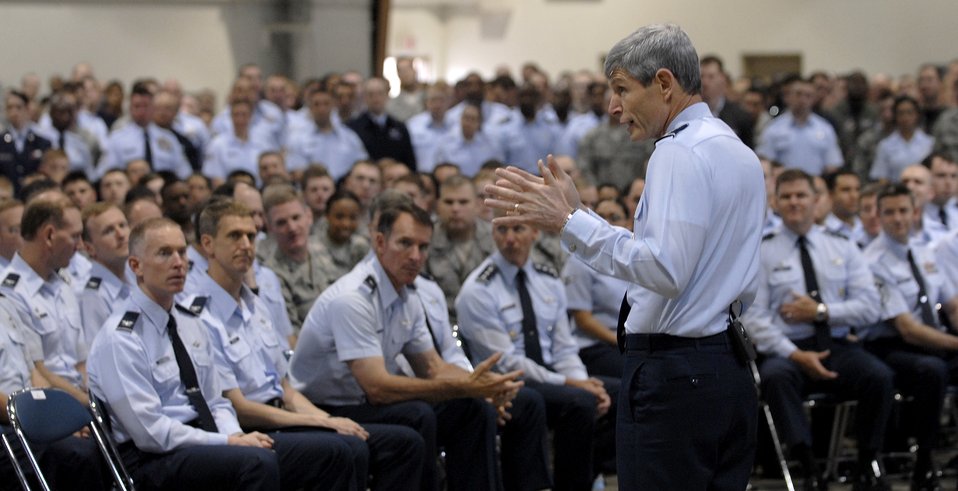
CSAF visits Osan Air Base, South Korea

Air Force Chief of Staff Gen. Norton Schwartz talks with Airmen May 11 during his visit to Osan Air Base, South Korea. General Schwartz was there as part of his Pacific Air Force tour, visiting and talking to the Airmen.